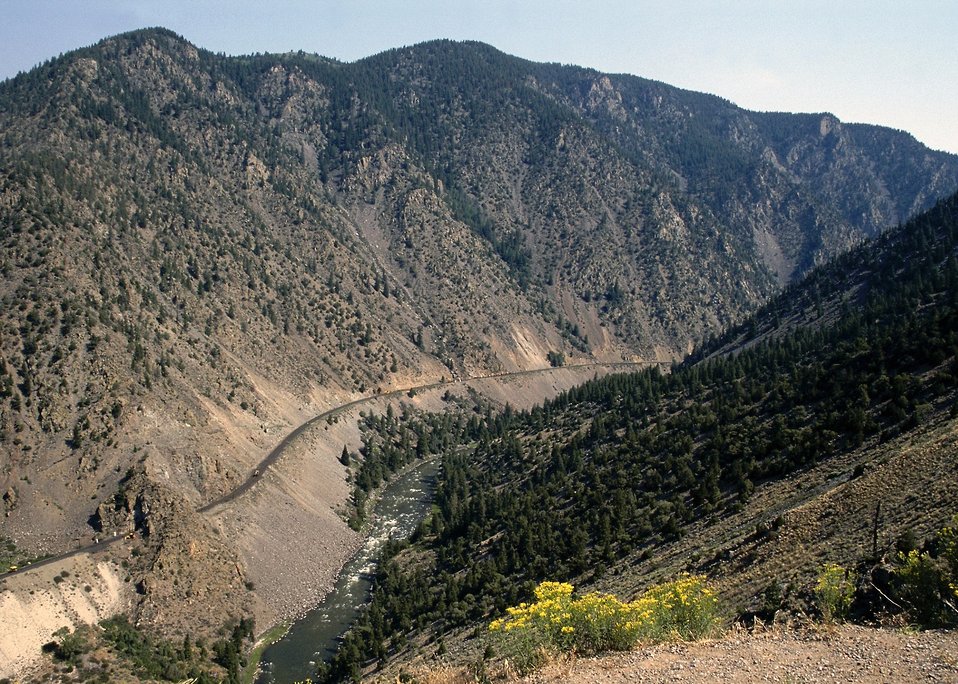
Gore Canyon